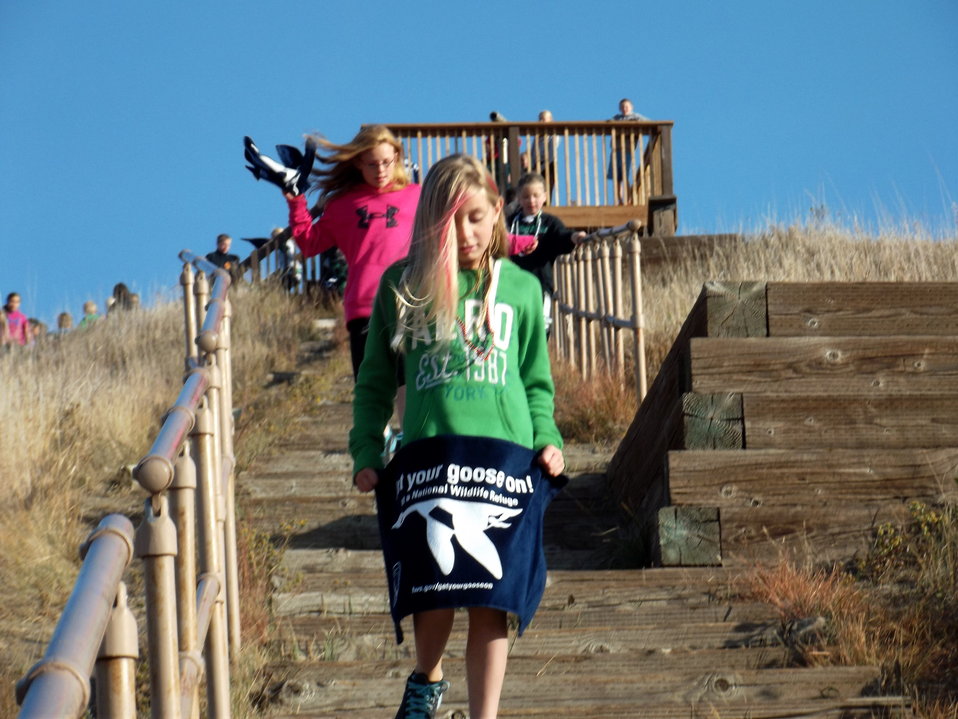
Get Your Goose On!

Photo taken at Sullys Hill National Game Preserve.